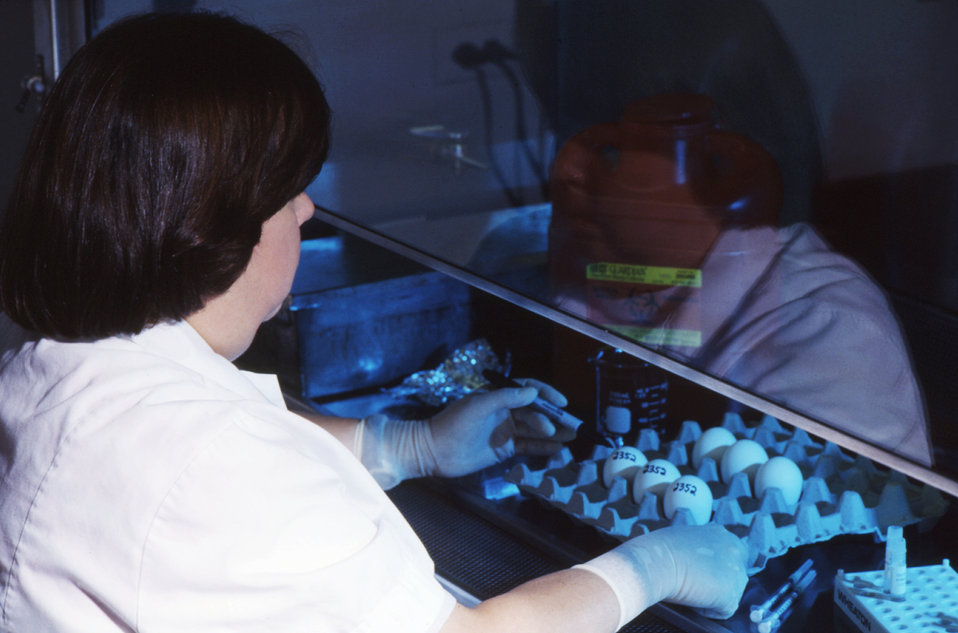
This lab technician is marking specimens during a chicken egg inoculation experiment.